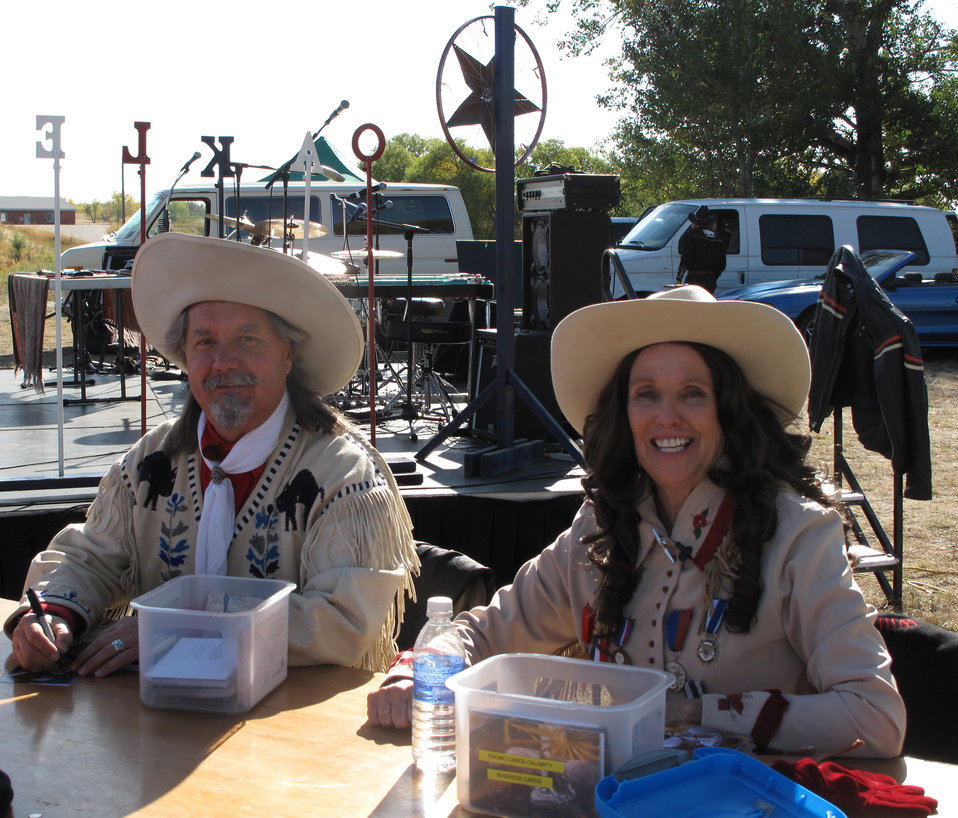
Refuge Round-up 2010

Buffalo Bill and Annie Oakley.